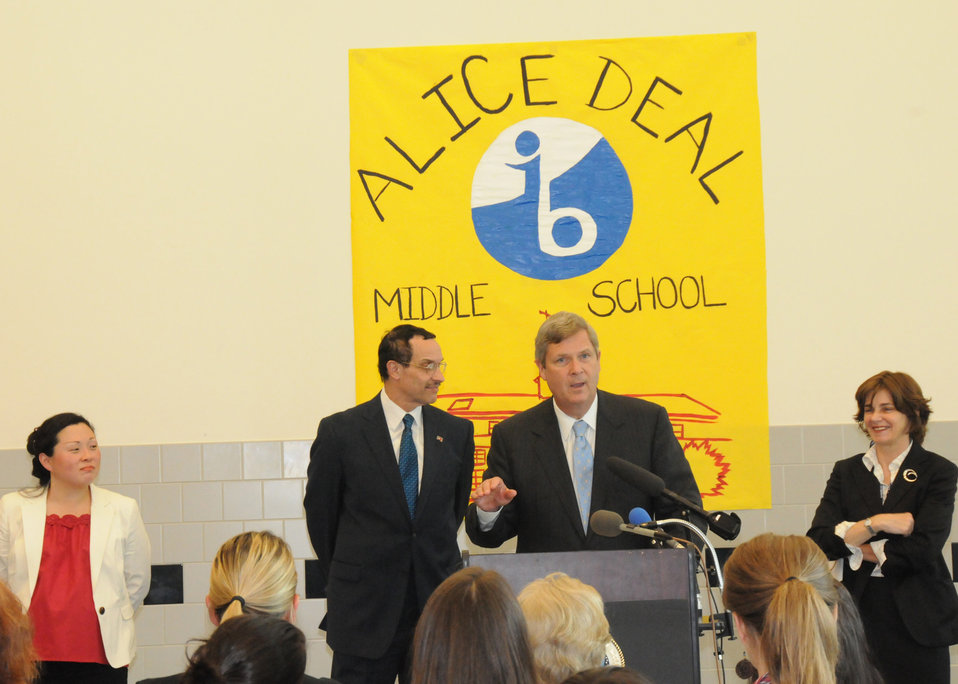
Agriculture Secretary Tom Vilsack joins local officials, school officials, and students at Alice Deal Middle School in Northwest Washington D. C., to promote the “Healthy Schools” legislation passed by the D.C. Council and to emphasize the Obama Administration priorities for improving school meals and the health of America’s children. Secretary Vilsack stressed the important role that the Department of Agriculture will play in implementing the recommendations from the Childhood Obesity Task Force’s action plan, “Solving the Problem of Childhood Obesity Within a Generation” on Thursday, May 13, 2010. (L to R behind the Secretary are Alice Deal Middle School Principal Melissa Kim, D. C. Council Chair Vincent Gray, and D.C. Councilwoman Mary Cheh). USDA photo 10di1358-130.